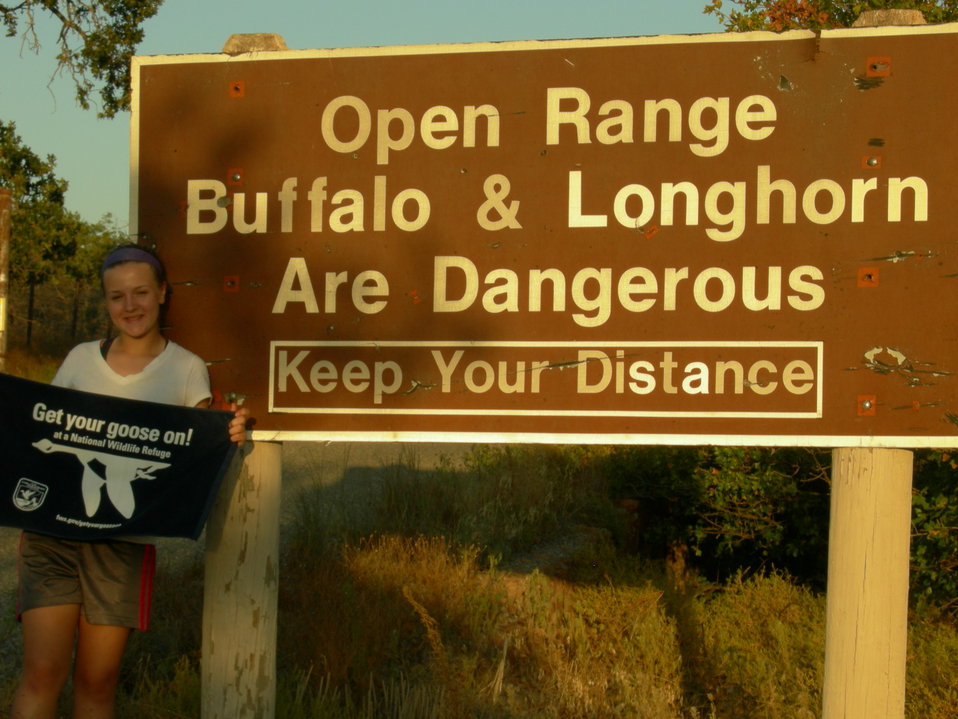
Get Your Goose On!

Wichita Mountains National Wildlife Refuge in Oklahoma.